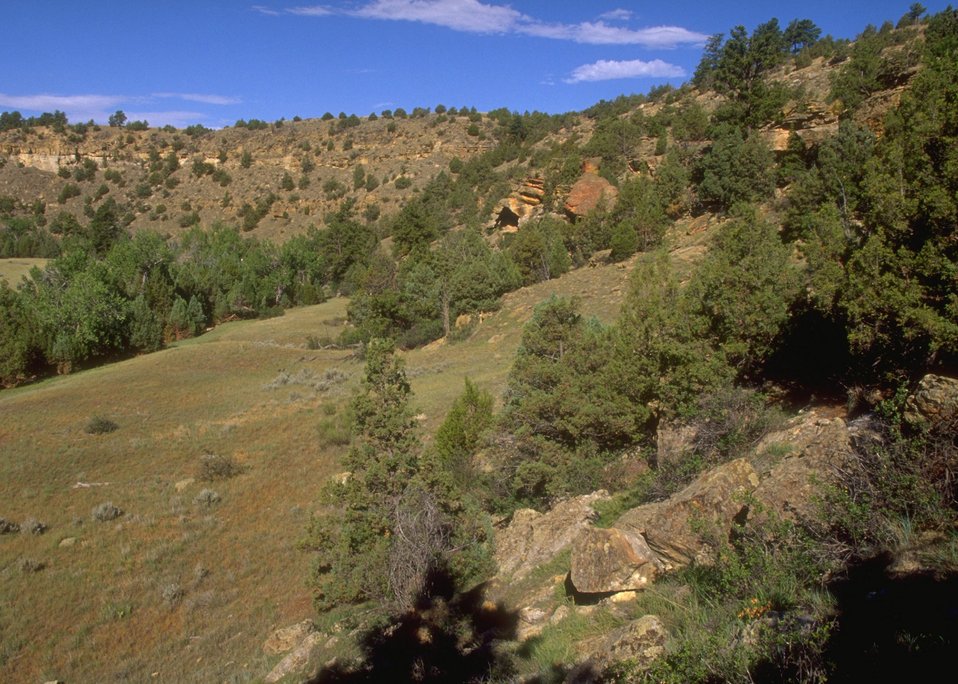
General view of Whoopup Canyon, Newcastle Field Office.